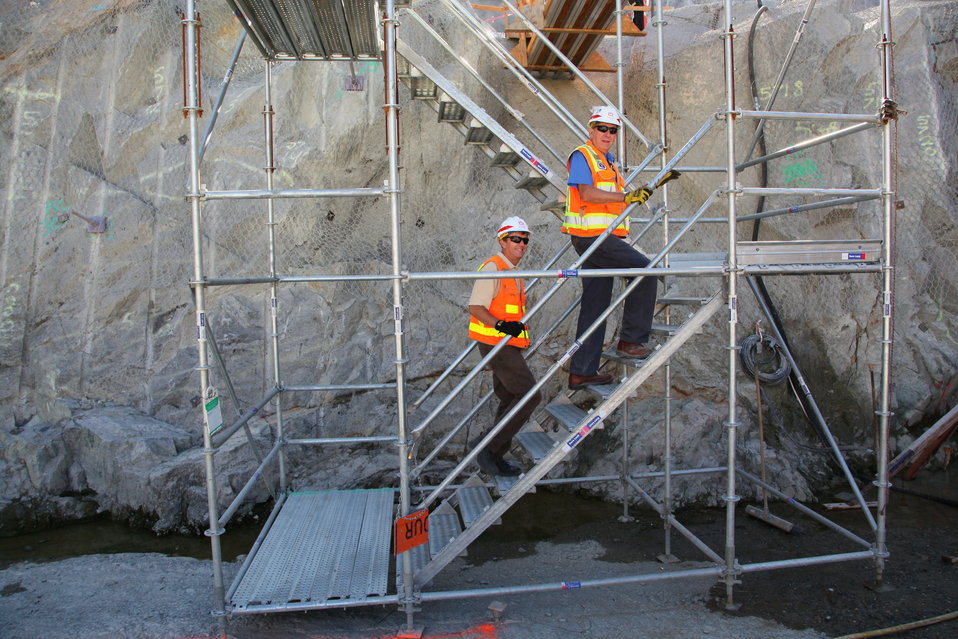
Safety a priority at Folsom Dam project

Wearing personal protective equipment, employees for the U.S. Army Corps of Engineers Sacramento District safely navigate the construction zone at the auxiliary spillway using walkways and scaffolding at the Folsom Dam in Folsom, Calif., Sept. 19, 2012. Safety at the job site is a number one priority; equipment and personal safety are a requirement. The Sacramento District is building the spillway in cooperation with the U.S. Bureau of Reclamation, the Central Valley Flood Protection Board, and the Sacramento Area Flood Control Agency to improve the safety of the existing dam and reduce flood risk for the greater Sacramento area.